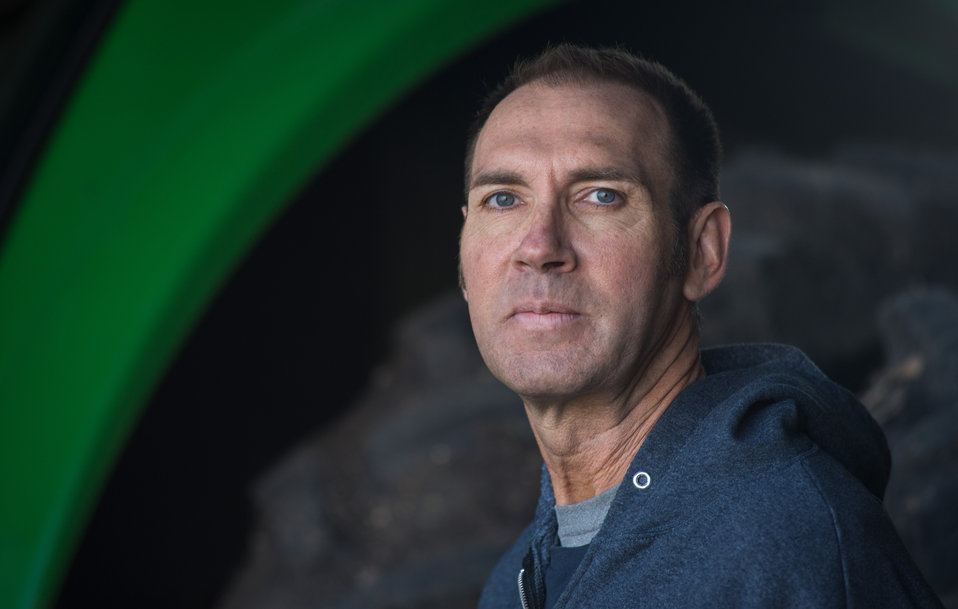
Jeff Hoff at his farmstead in Perley, MN, on Tuesday, April 30, 2013. With the assistance of the U.S. Department of Agriculture (USDA), he was able to build up and modify an earthen dike that holds back flood waters around his home, structures and and farm equipment. To learn about the USDA Red River Basin Initiative, see www.mn.nrcs.usda.gov/news/features13/RRBI.html.